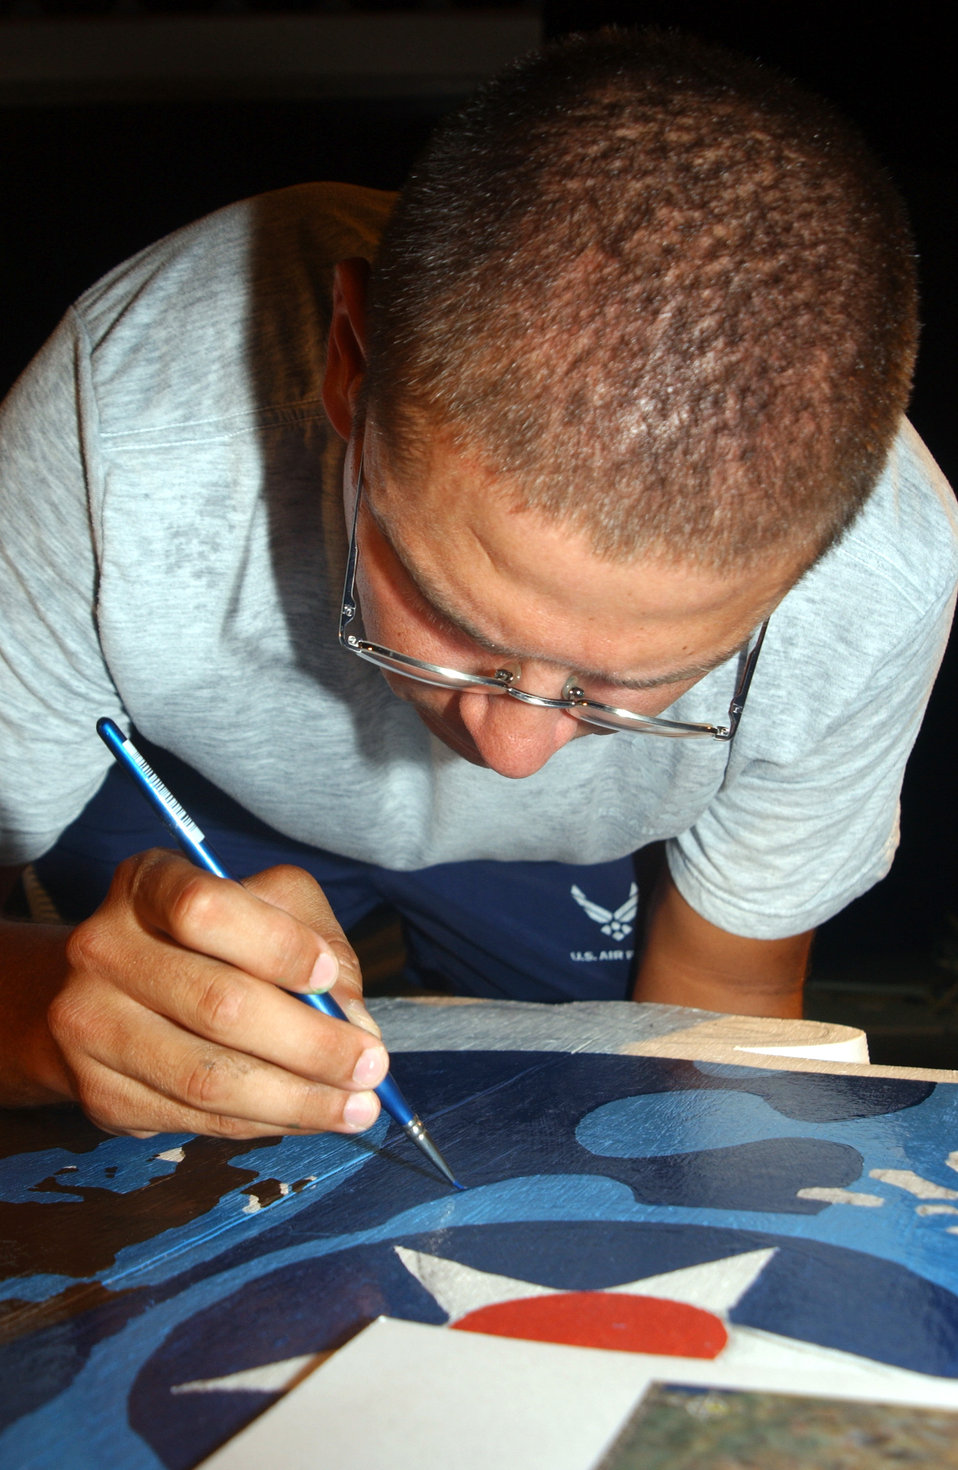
Painting the stage

Airman 1st Class Rodrigo Trevino paints details on a plywood U.S. Central Command Air Forces crest Sept. 7, part of a design for a stage recently constructed for the 380th Expeditionary Wing at a forward-operating base in Southwest Asia. Airman Trevino was part of a group of people who won a design contest after the stage was built. The work, which includes the CENTAF and wing crest, took about three weeks to complete. Airman Trevino is assigned to the 380th Expeditionary Civil Engineer Squadron.